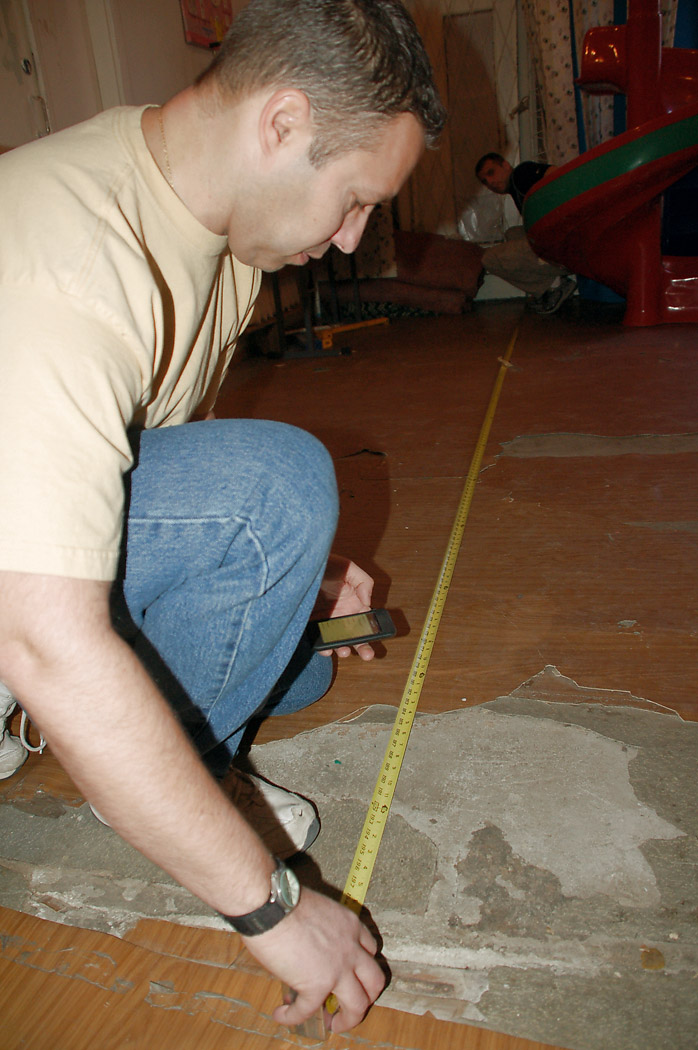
Manas Airmen tend to children's cancer center needs

Tech. Sgt. Thomas Pettit takes floor measurements during a Feb. 25 visit to Kyrgyzstan's sole Children's Cancer Hospital in Bishkek. Sergeant Pettit is assigned to the 376th Expeditionary Medical Group and is deployed from Beale Air Force Base, Calif. He is originally from Fort Wayne, Ind.